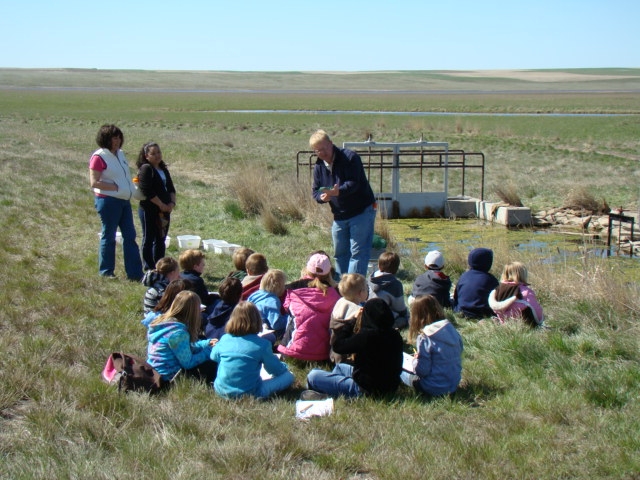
Benton Lake National Wildlife Refuge

Apart of the local third grader curriculum is to come out to the refuge and learn about wetlands and grasslands. They collect aquatic inverts and learn how to identify various birds.